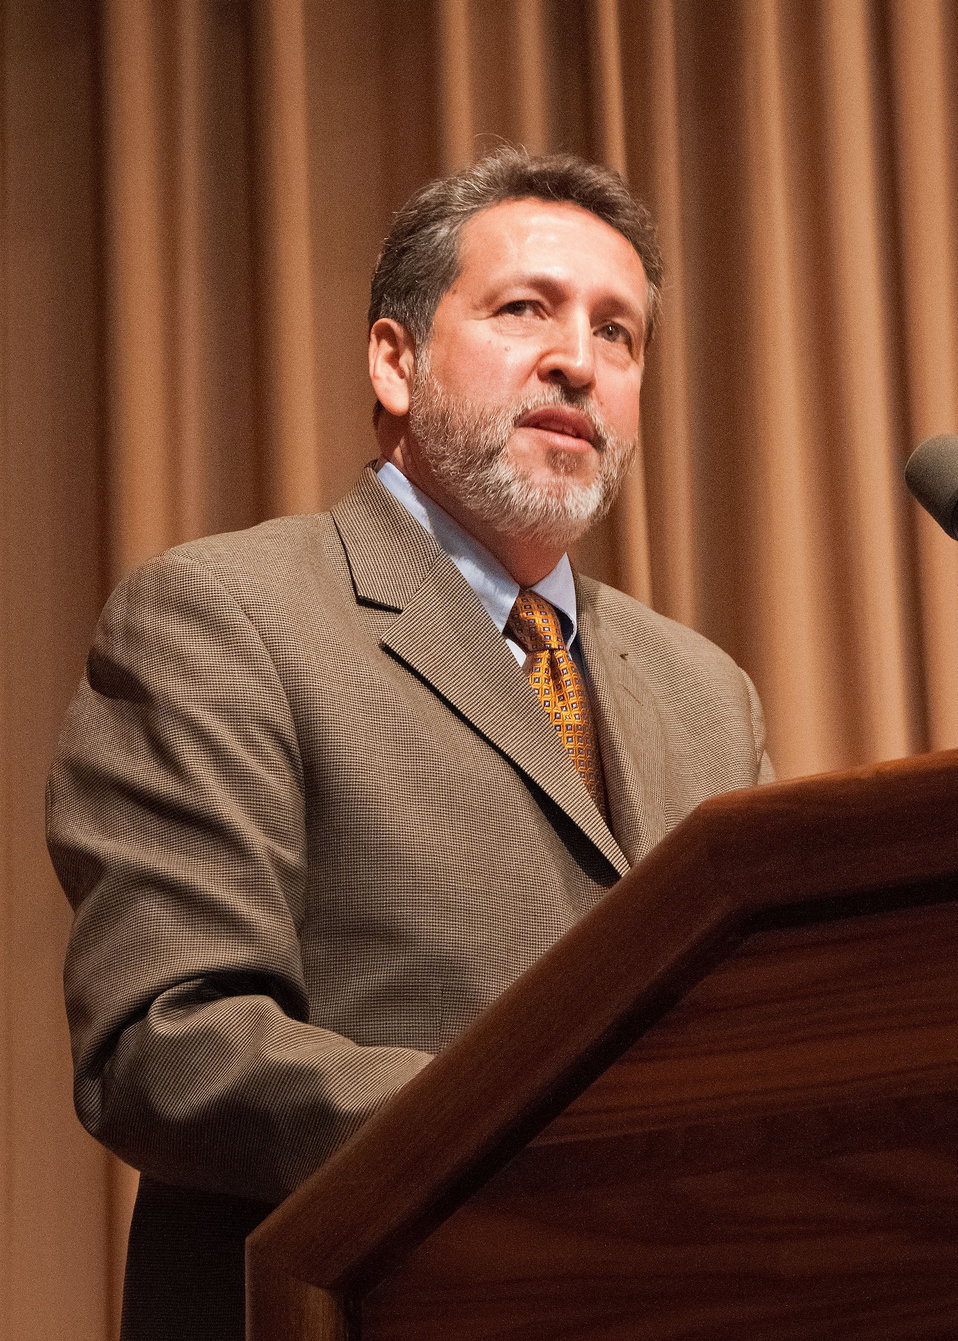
U.S. Department of Agriculture (USDA) Director, Office of Adjudication, Office of the Assistant Secretary for Civil Rights Carl-Martin Ruiz offers Closing Remarks at USDA's Veterans Day Observance: Honoring All Who Served, in Washington, D.C. on Wednesday, Nov. 7, 2012. Ruiz an Army veteran served honorably with the U.S. Army, elite 3/11 Armored Calvary (Black Horse), Reconnaissance Squadron.